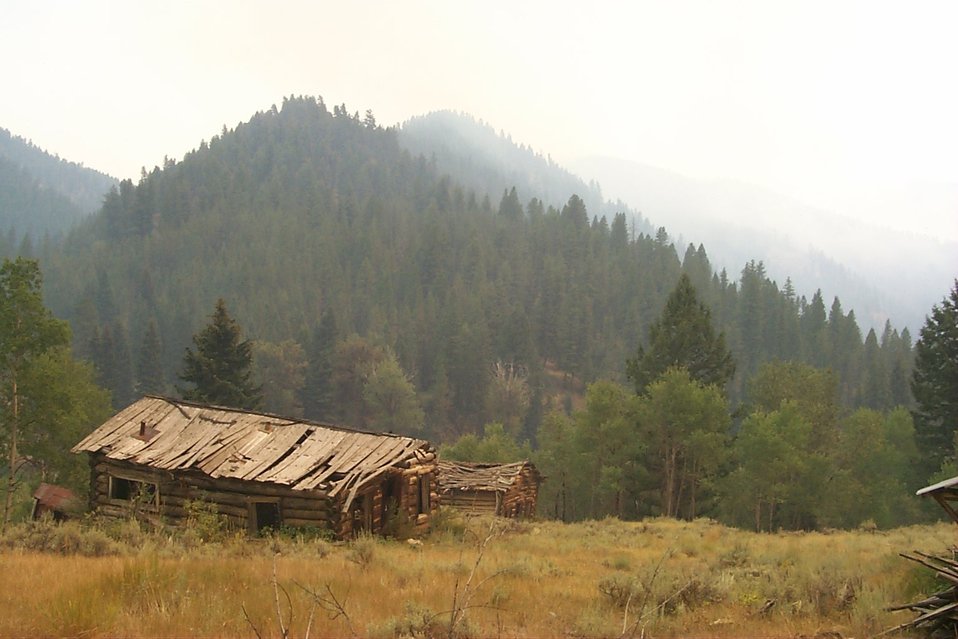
Urban interface Fire Clearwater Fire Salmon Field Office USRD Upper Snake River District